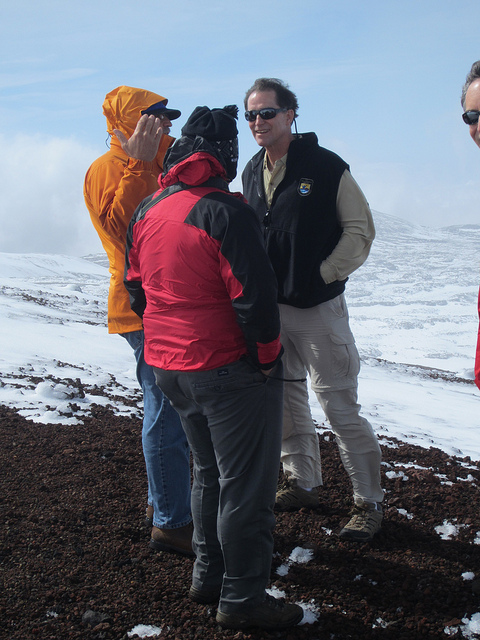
Dan Ashe on Mauna Kea

Briefing at 13,000 feet.